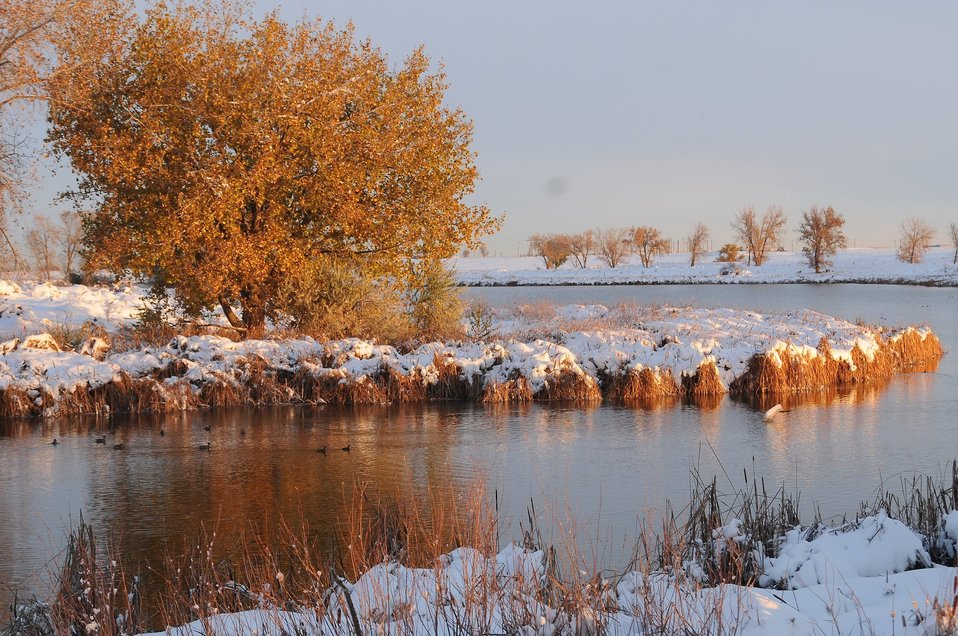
snow scene

Rocky Mountain Arsenal National Wildlife Refuge, CO